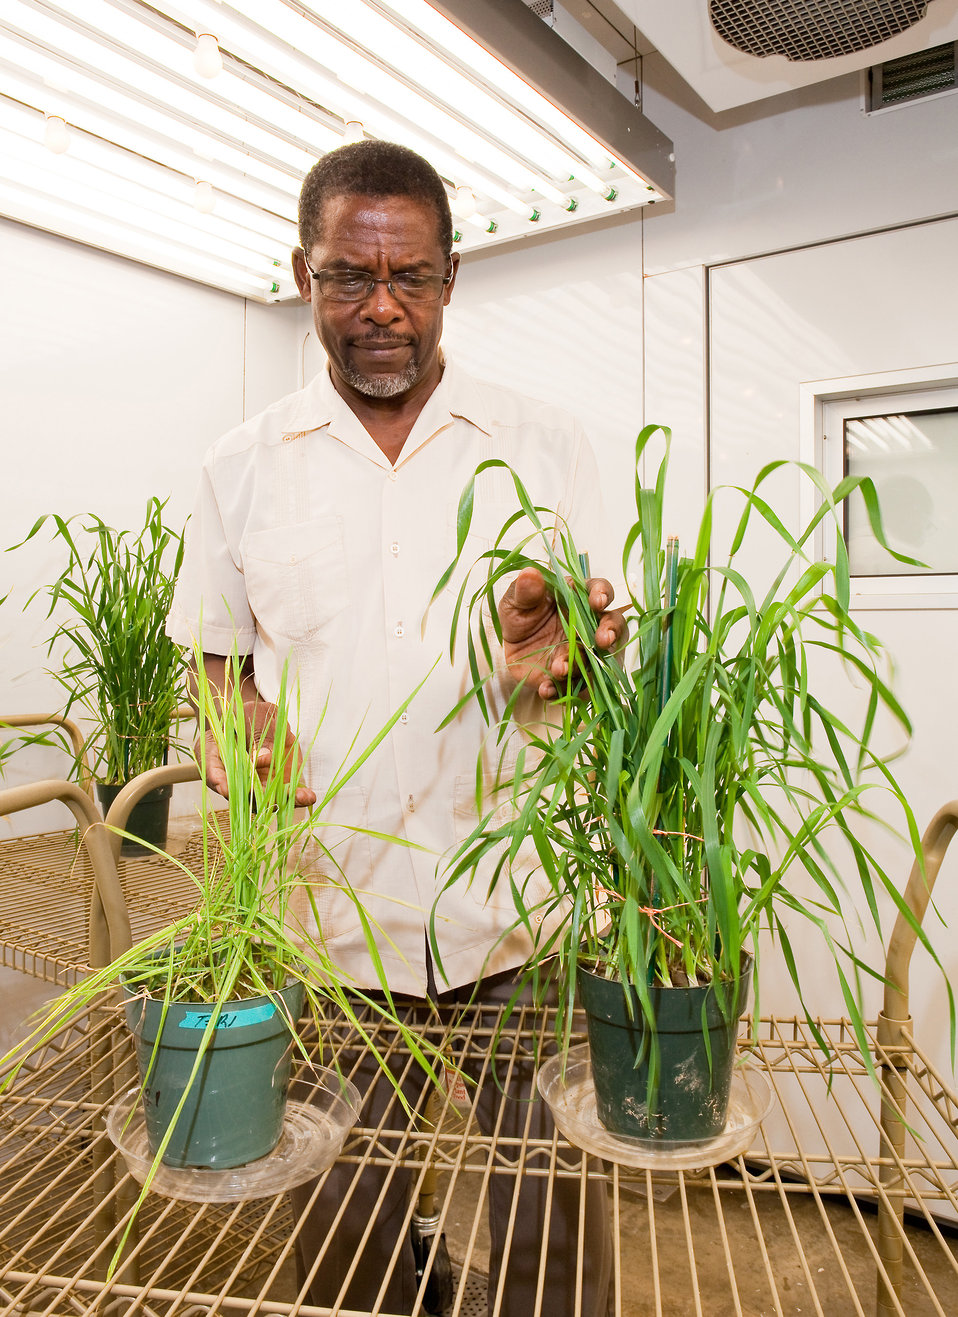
U.S. Department of Agriculture (USDA) Agriculture Research Service (ARS) agronomist Eton Codling inspects wheat plants grown in bio solid-amended soils at the ARS Environmental Management and Byproduct Utilization Laboratory in Beltsville, MD on Sept. 3, 2012. Yields from some bio solid amendments were higher, but yields from lime-treated bio solids were severely reduced. The unhealthy plant on the left is growing in soil amended with lime-treated bio solids.